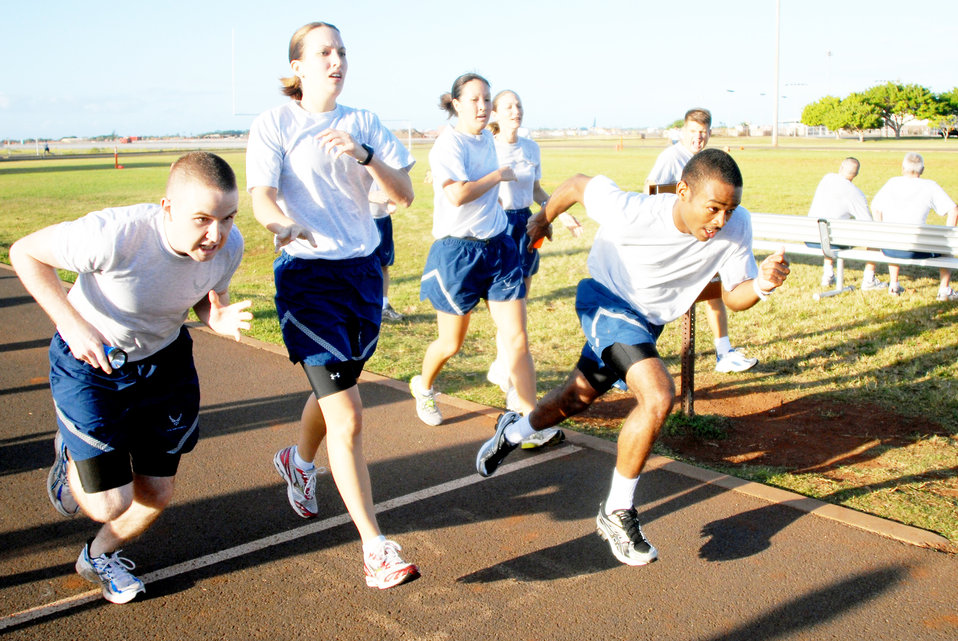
13th AF Jungle Day

Members of 13th Air Force pass batons while competing in a relay race during Jungle Day Nov. 13, 2009, at Hickam Air Force Base, Hawaii. The Jungle Day tradition originated when the organization was assigned to Andersen AFB, Guam, and gives 13th Air Force members a chance to have fun and give back to the local community.